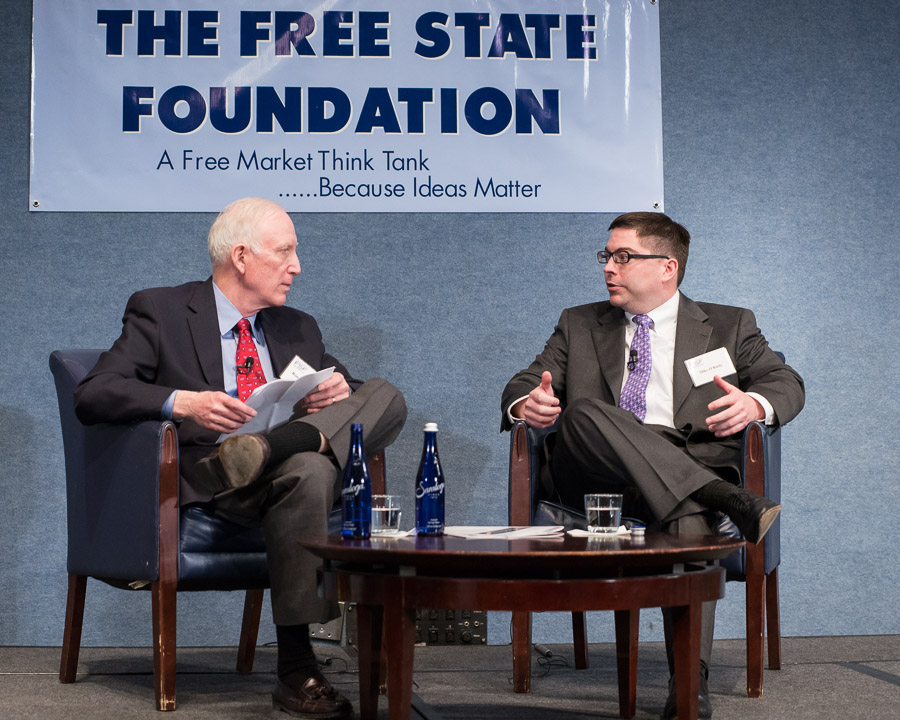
3.18.2014 Free State Foundation

FCC Commissioner Michael O'Rielly & Randolph May, President of The Free State Foundation.